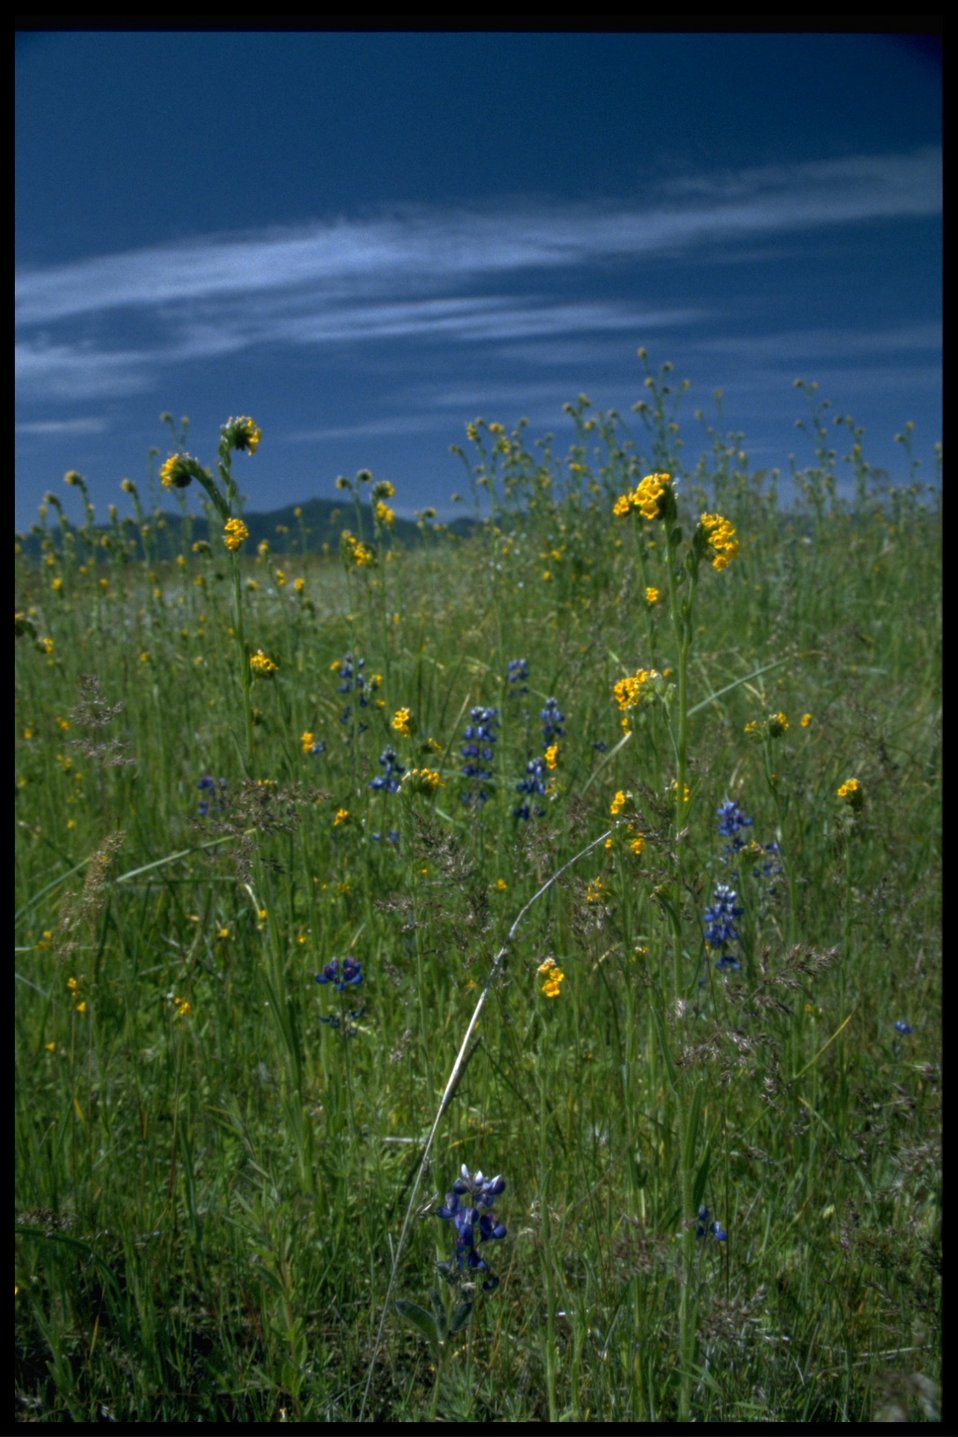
Farshot of Amsinckia intermedia, Amsinckia menziesii var intermedie.